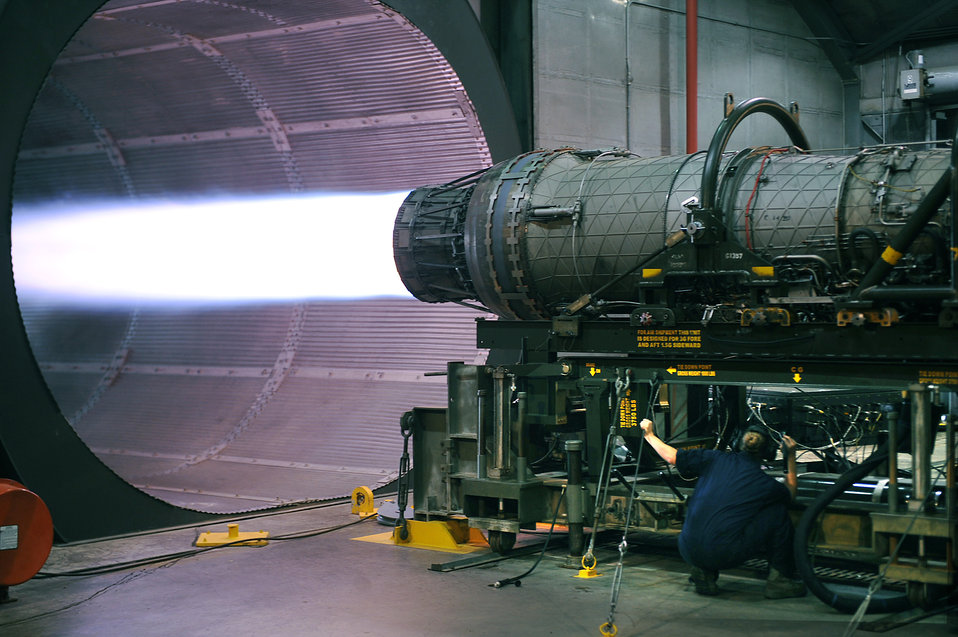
Blast of energy

Staff Sgt. Ashley Guillory performs a leak check during an engine run May 13, 2010, at the hush house at Seymour Johnson Air Force Base, N.C. These checks ensure there are no leaks in the engine that could lead to a fire or faulty line. Sergeant Guillory is an aerospace propulsion craftsman with the 4th Component Maintenance Squadron.